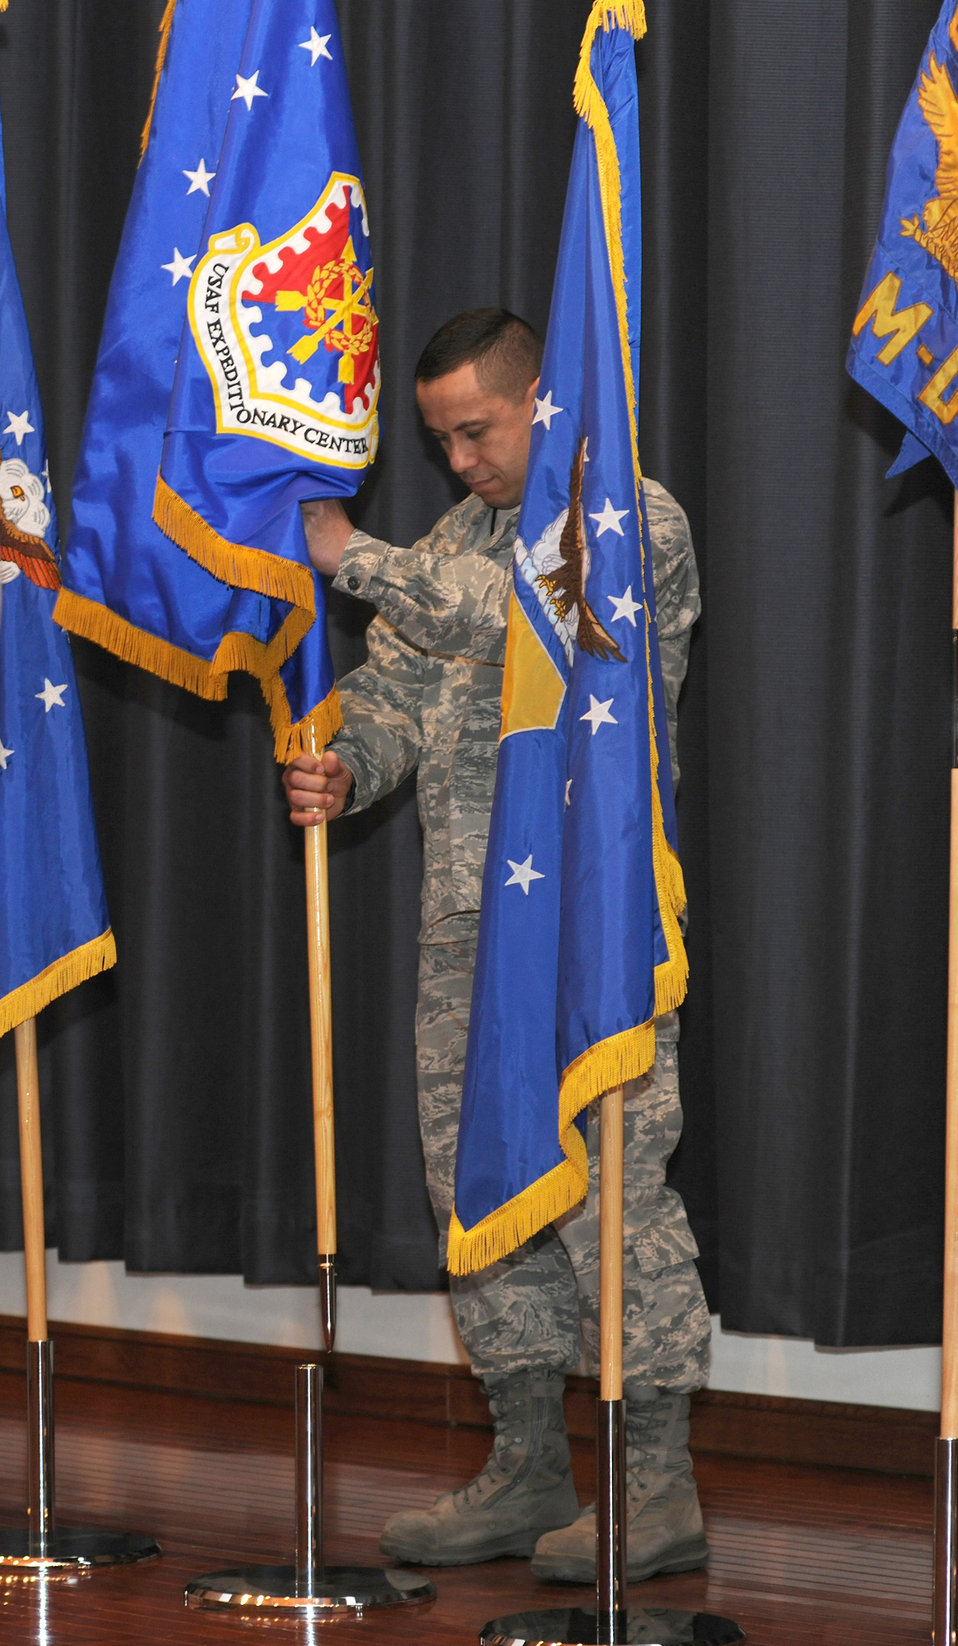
Expeditionary center formally assumes command of five Air Mobility Command units

Chief Master Sgt. Jeffrey Cui replaces the 18th Air Force flag with the U.S. Air Force Expeditionary Center flag during a re-alignment ceremony Jan. 6, 2011, at Joint Base McGuire-Dix-Lakehurst, N.J. The expeditionary center assumed command of five former 18th Air Force units as part of re-structuring within Air Mobility Command. Chief Cui is the U.S. Air Force Expeditionary Center command chief master sergeant.